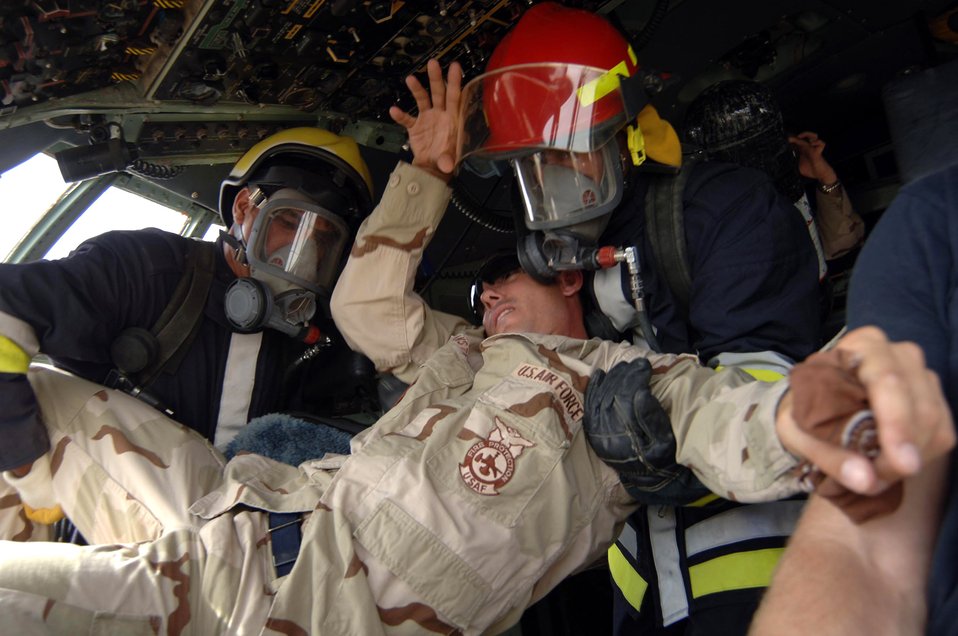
Airmen train Iraqi firefighters at international airport

Firefighters from the Iraqi air force remove Staff Sgt. Vance Vansteel from an Iraqi C-130 July 9 at New Al-Muthana Air Base, Iraq. The event was an exercise where Iraqis trained to shut down aircraft engines and remove an unconscious pilot. U.S. Airmen frequently train with Iraqi firefighters in effort to make them more autonomous. Sergeant Vansteel is a 447th Expeditionary Civil Engineer Squadron firefighter.